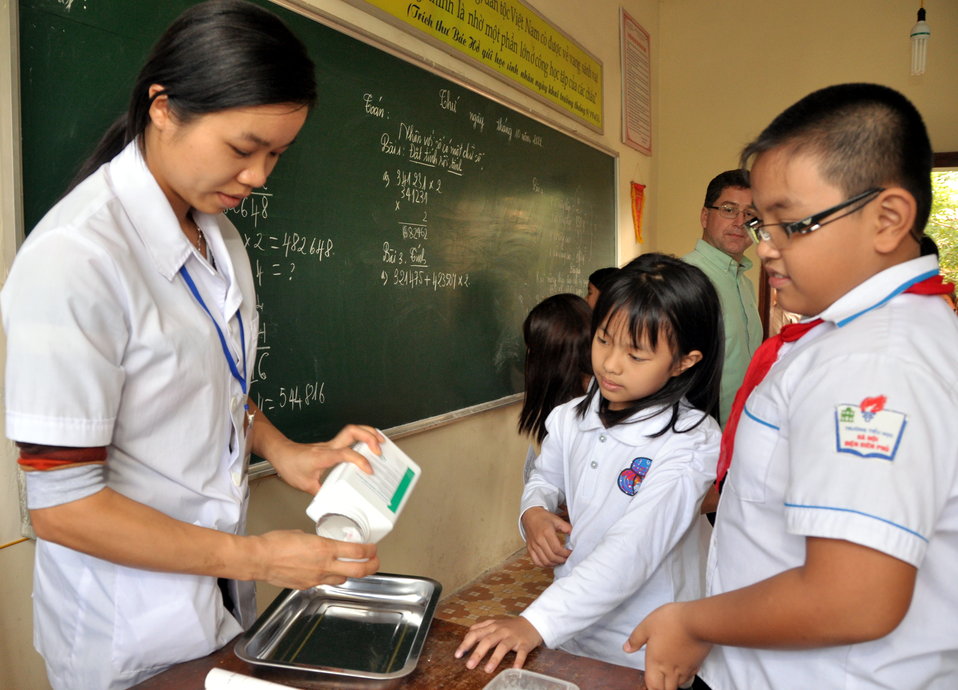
School children receive a dose of deworming medicine in Dien Bien

October 31, 2012